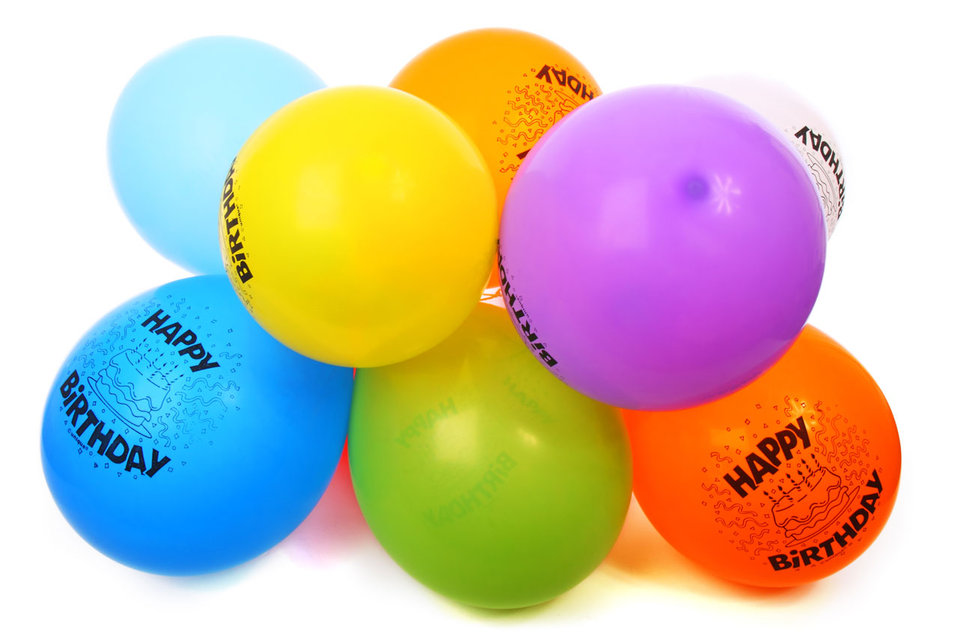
Colorful balloons isolated on white background.